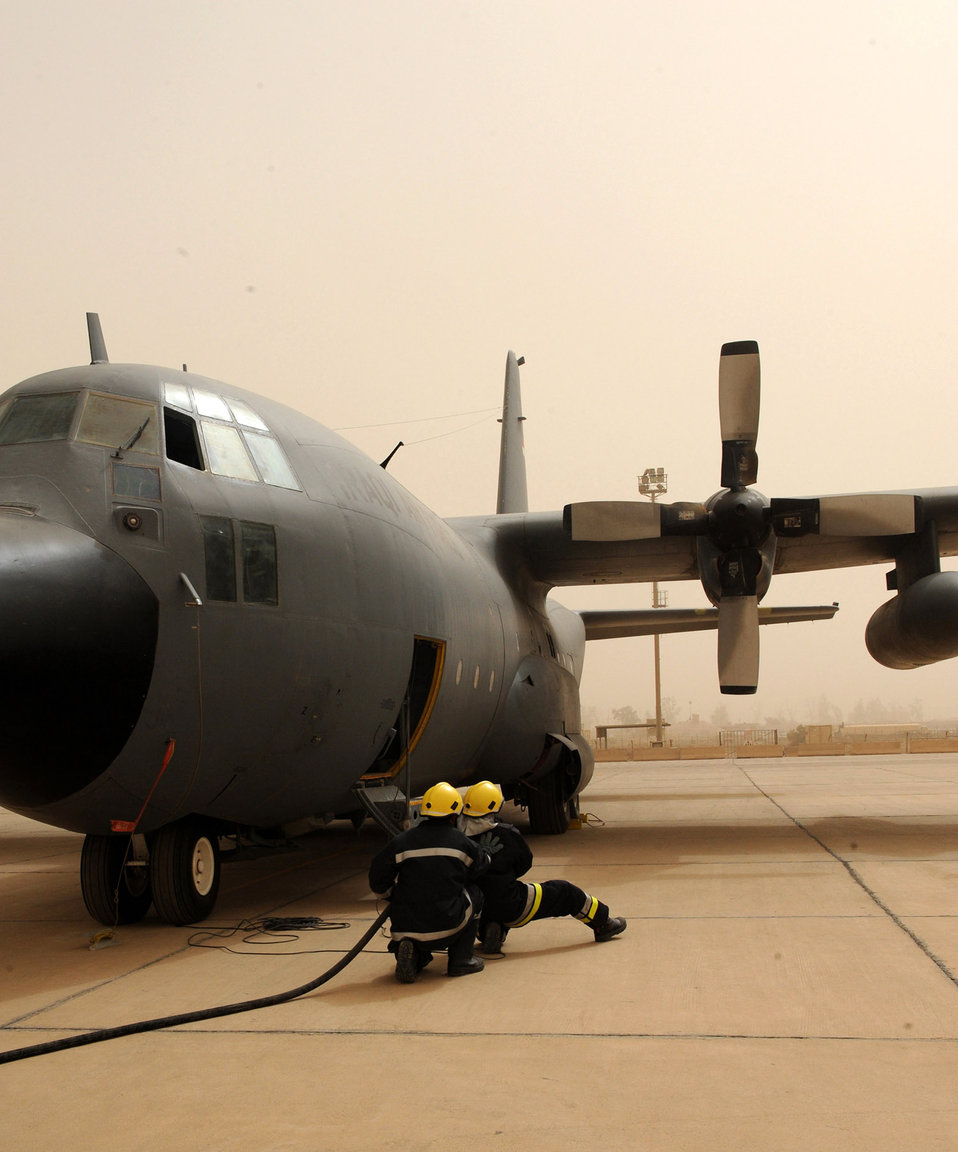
Iraqi air force soars through U.S.-guided exercise

Iraqi firemen respond to a simulated fire on an Iraqi C-130 June 16 at New Al Muthana Air Base, Iraq. The simulation was part of a ground emergency exercise to test the Iraqi's notification and response procedures.